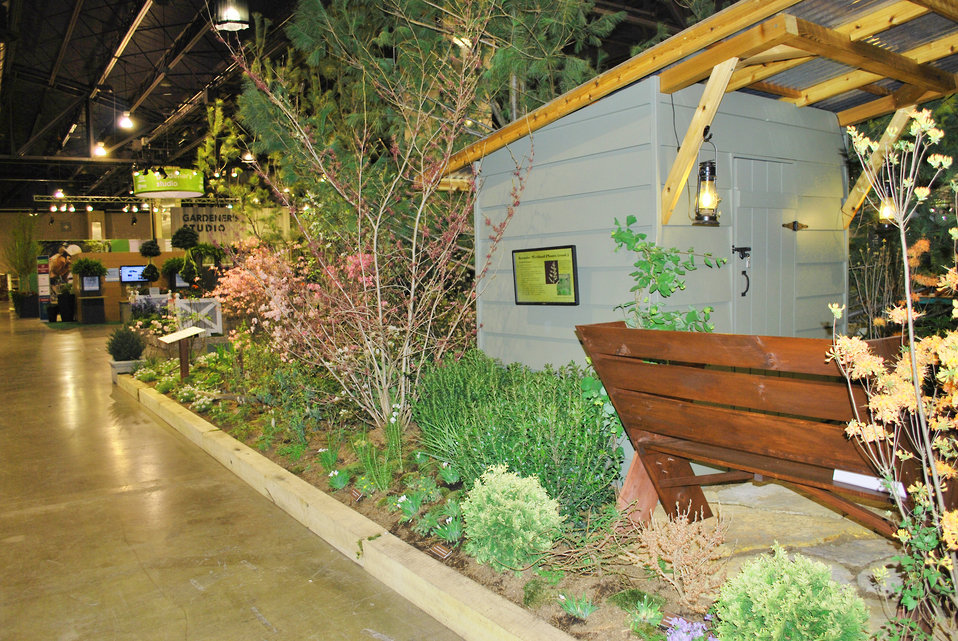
March 4, 2013 – A Native, Mid-Atlantic, Woodland Garden

Over 225,000 visitors enjoyed the Brilliant! showcase of the gardens and culture of Great Britain at the 2013 Philadelphia Flower Show.

EPA's display had some fun with the opposite approach - using the exhibit as an opportunity to display the natural beauty of the native wildflowers, ferns, shrubs, and trees native to the area before the 'British Invasion' and before large parcels of land had been cleared for development.

Invasive species can cause a wide range of impacts to their new environments. Learn about the issues near you

More EPA resources, species photos, and information about the 2013 Flower Show